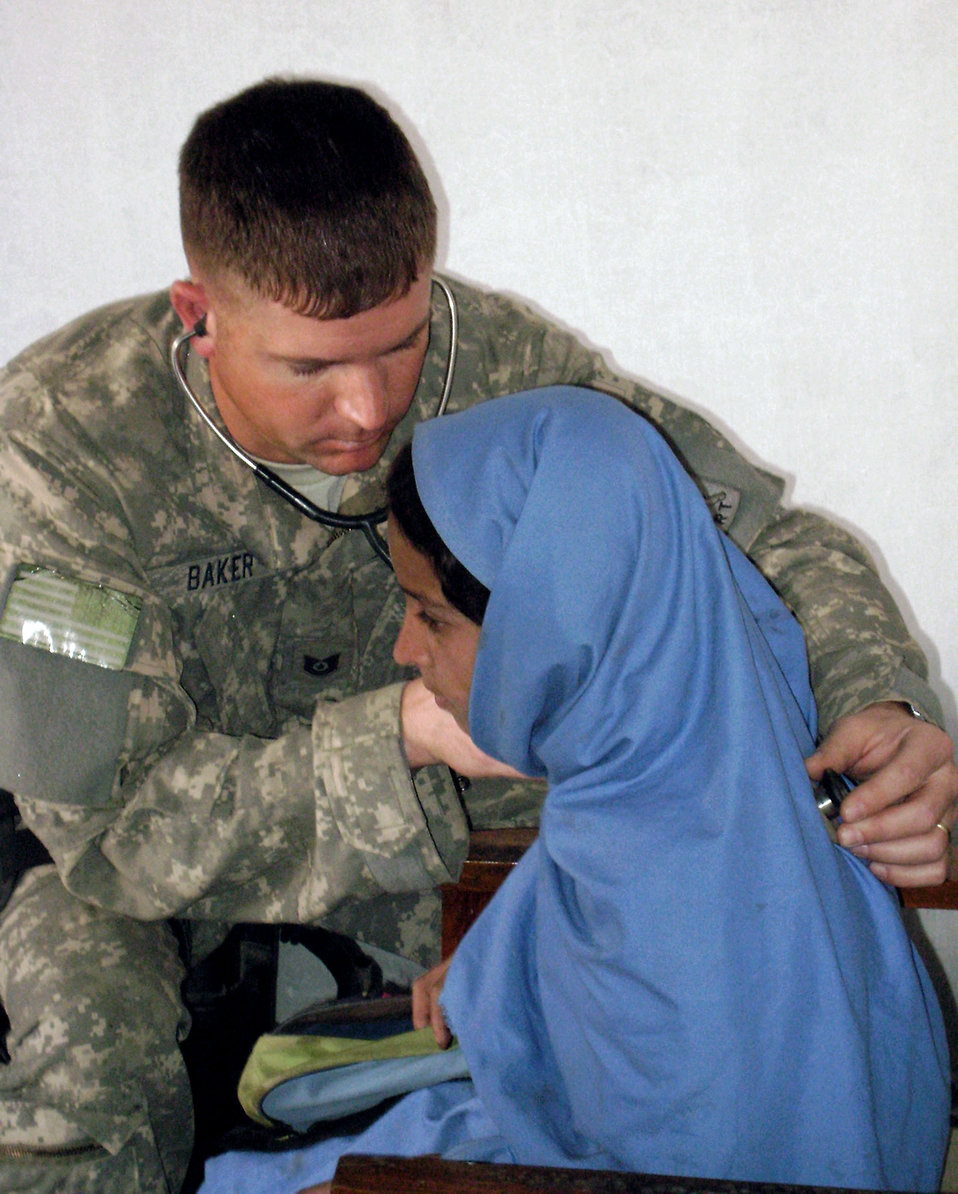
Servicemembers provide medical care to 120 Afghans

Technical Sgt. Kyle Baker checks the breathing of a student at the Hope of Mother Clinic Feb. 24 in the Surkh Rod District of Afghanistan. Sergeant Baker is a medic with the provincial reconstruction team in Afghanistan's Nangarhar province.